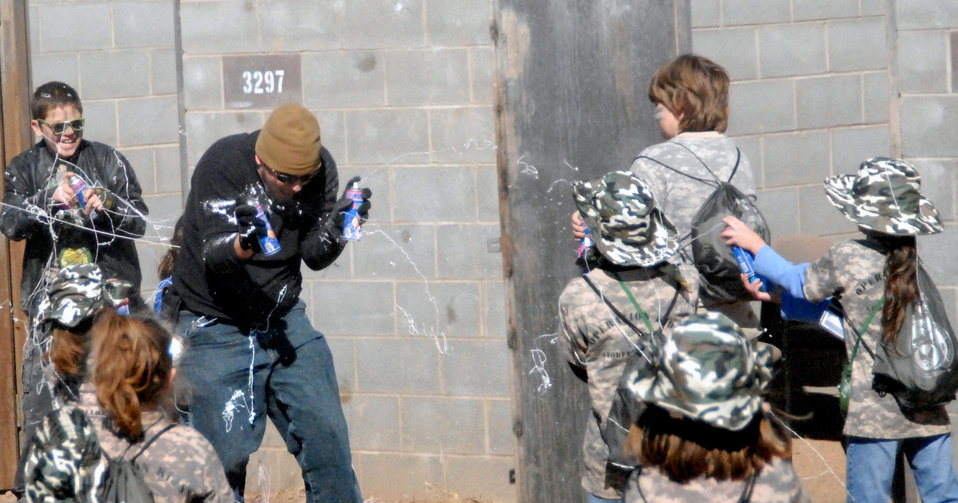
Goodfellow Operation KIDS

Youths participating in Operation KIDS 2010 put their skills to the test as they were ambushed just outside Camp Discovery Nov. 13, 2010, at Goodfellow Air Force Base, Texas. More than 60 military youths participated in this year's event to get a glimpse of what their military parents go through when deploying.